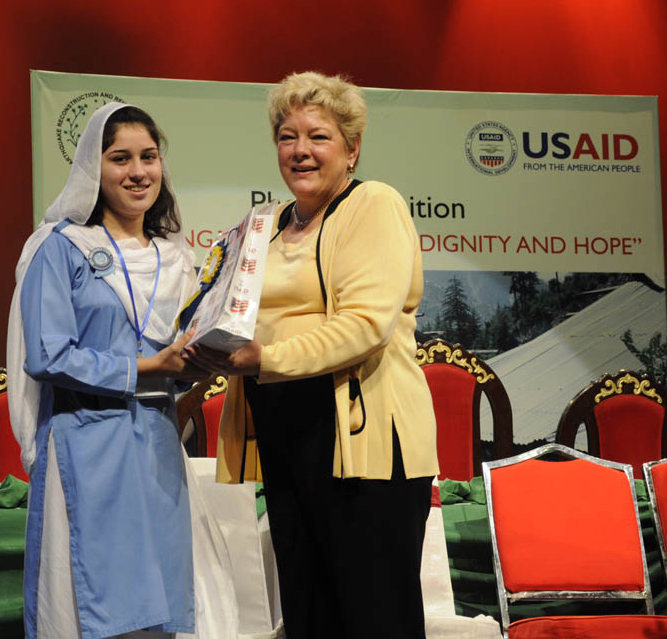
Photography and Drawing Exhibition on Pakistan 2005 Earthquake “Rebuilding Together: With Dignity and Hope”

Karen Freeman, USAID Deputy Director for Pakistan handing over a gift to the winner of a photo exhibition “Rebuilding Together: With Dignity and Hope” sponsored by USIAD at Pakistan National Council of Arts (PNCA) in Islamabad.